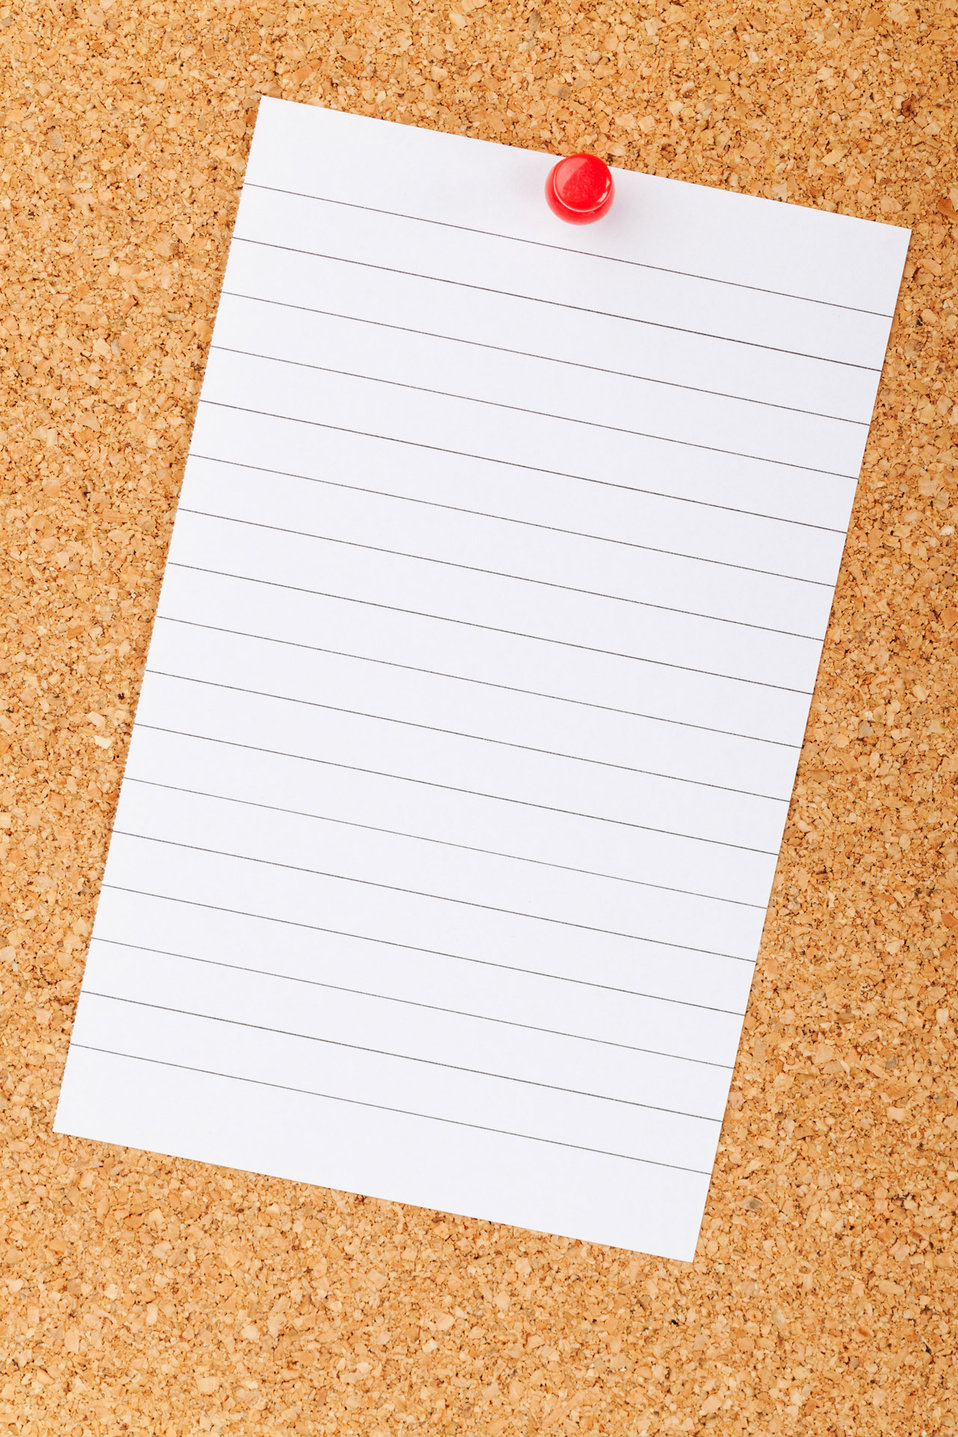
Note on a cork board

A blank piece of paper on a cork board.